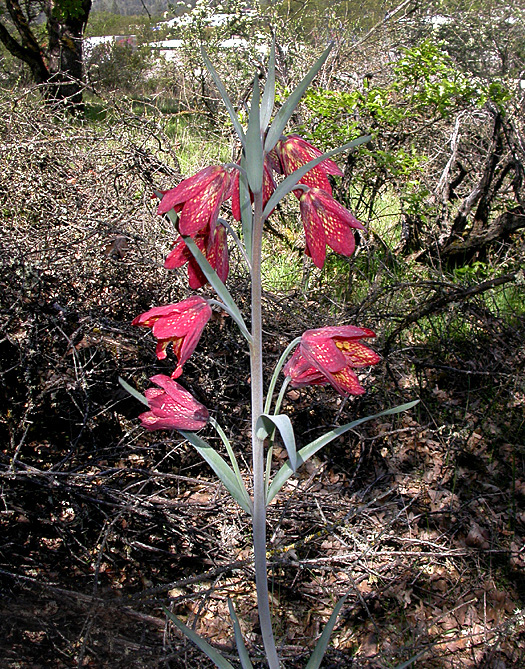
Gentner's Fritillary

Plant description:

Fritillaria gentneri is a perennial herb arising from a fleshy bulb, with one to twelve deep red to maroon bell-shaped flowers produced on a single, erect, 40 to 70 centimeter tall flowering stalk. The leaves of reproductive plants occur in whorls along the stalk, while vegetative plants produce a single basal leaf varying in length from 0.5 to 29 centimeters. Most reproduction occurs through asexual production of small 'rice grain' bulblets on the surface of mature bulbs – these detach from the mother bulb and develop into new individuals. In general, the majority of the plants in a population are vegetative (rather than flowering), with numerous basal leaves (each representing one individual bulblet) massed near each flowering stalk.

Distinguishing characteristics:

Individuals of this species can be distinguished from similar congeners by comparing the nectary gland length/tepal length ratio and the extent of style branching. The nectaries of F. gentneri generally extend ¼ to ½ the length of the tepals, while those of F. recurva extend ¼ or less, and the long glands of F. affinis extend ½ or more of the tepal length. The style of F. affinis is divided for ½ of its length or more, with widely spreading branches, while only the tip (¼ or less) of F. recurva’s style is divided, with erect branches. The style of F. gentneri is intermediate between the two, with somewhat spreading branches extending slightly less than ½ the length of the style. These two characters, when evaluated in combination with flower color (scarlet in F. recurva, maroon in F. gentneri, and purplish-brown in F. affinis ), adequately differentiate these three species.

History:

This unusual fritillary was first noticed in a flower arrangement by Jacksonville, Oregon, resident Katherine Gentner in the early 1940’s. Katherine’s father, an entomologist at the Southern Oregon Experiment Station, recognized the uniqueness of this beautiful wildflower, and sent a specimen to his friend and associate, Oregon State University botanist Helen Gilkey. Dr. Gilkey subsequently published the description of this new species in the scientific journal Madroño, naming the plant after the Gentner family. Jacksonville’s continuing fondness for Gentner’s fritillary is exemplified by the city’s annual Fritillary Festival, held in late March and early April.